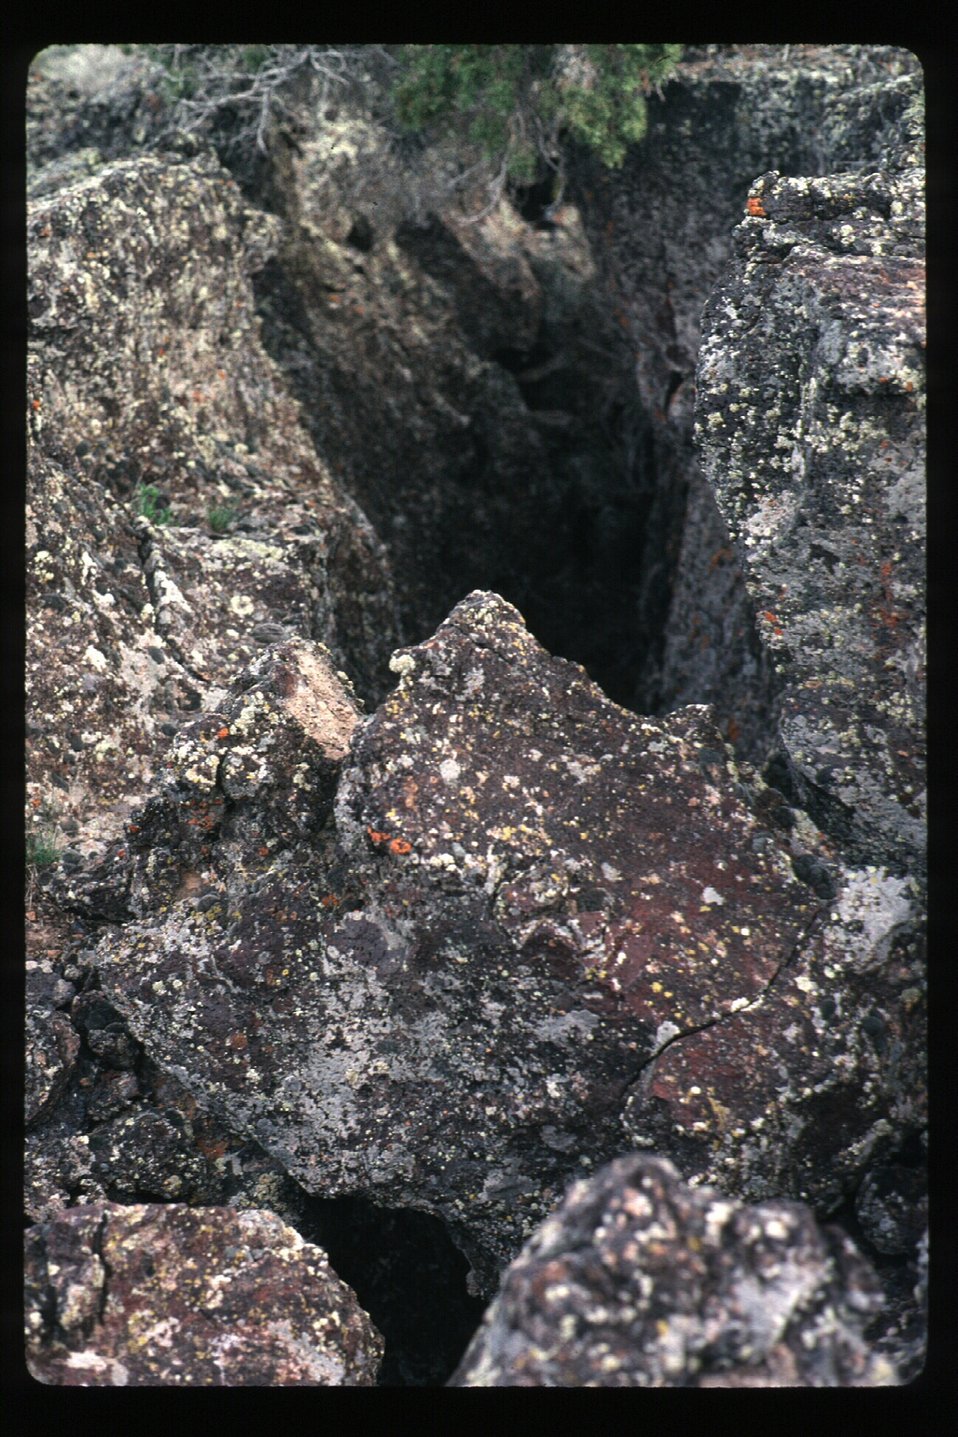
Hells Half Acre Lichen on rocks Wilderness Idaho Falls Field Office USRD Upper Snake River District